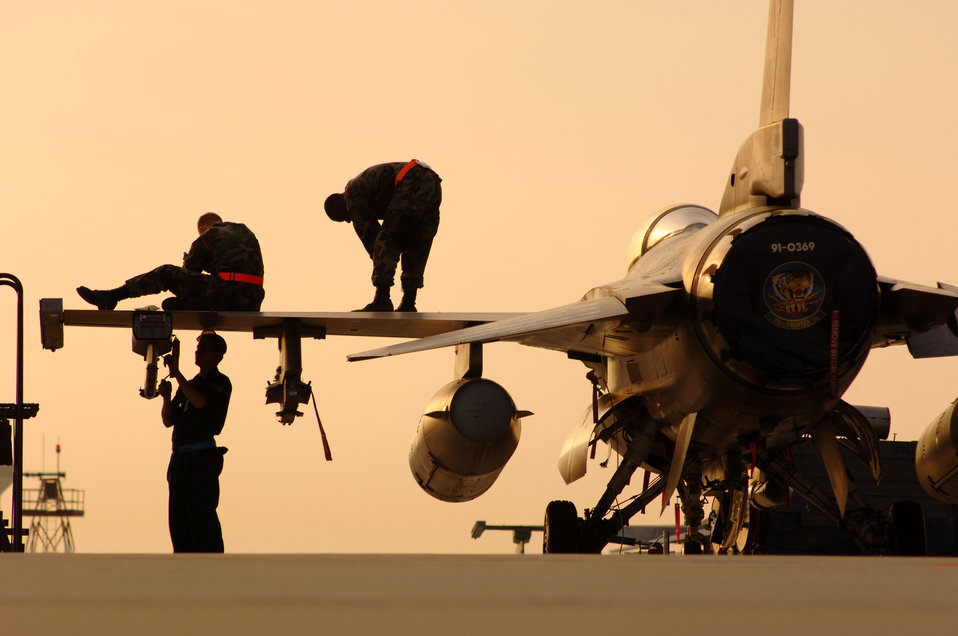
A Falcon in the nest

Crew chiefs with the 79th Aircraft Maintenance Unit at Shaw Air Force Base, S.C., prepare an F-16 Fighting Falcon for take off March 27 during an operational readiness exercise. The exercises help prepare Airmen for future deployments.